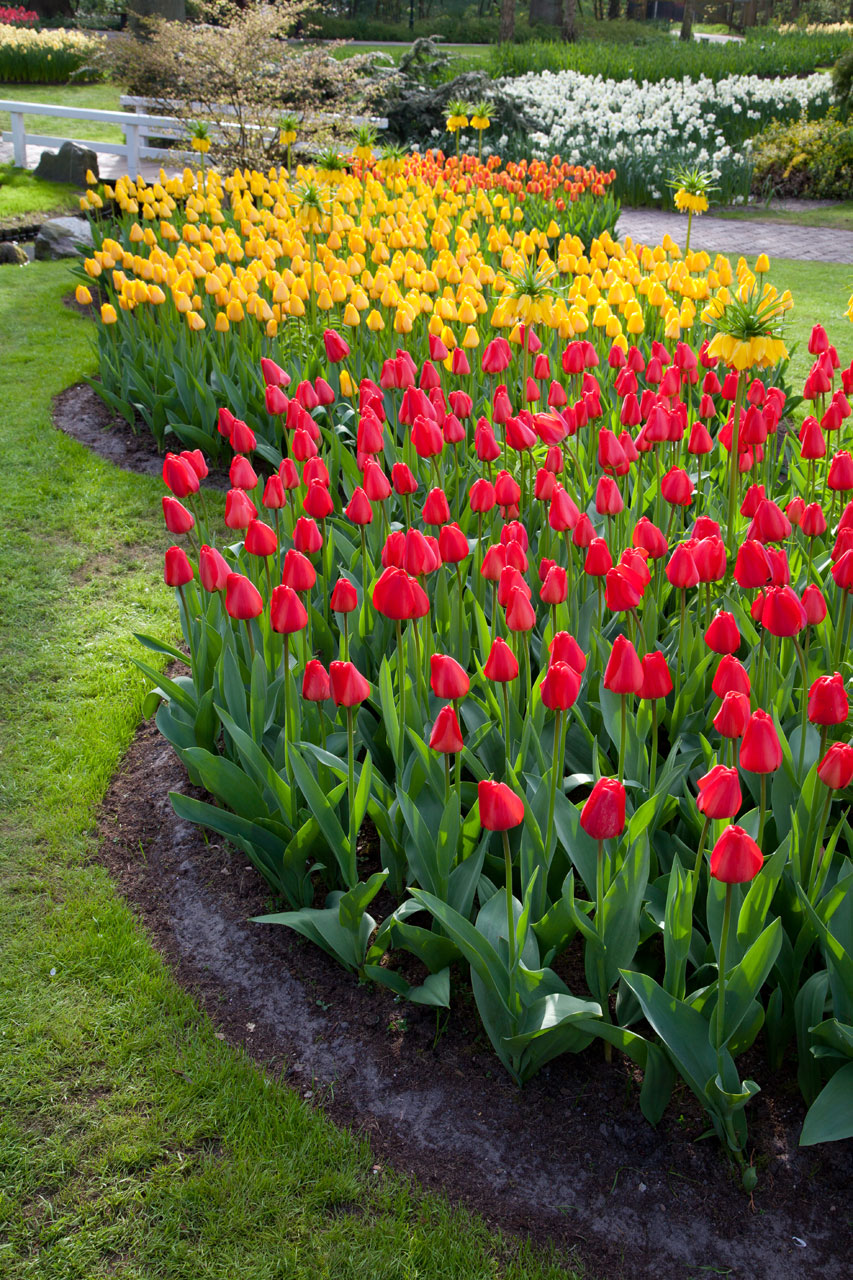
Red and yellow tulip beds

Red, yellow and orange tulip beds in keukenhof gardens.